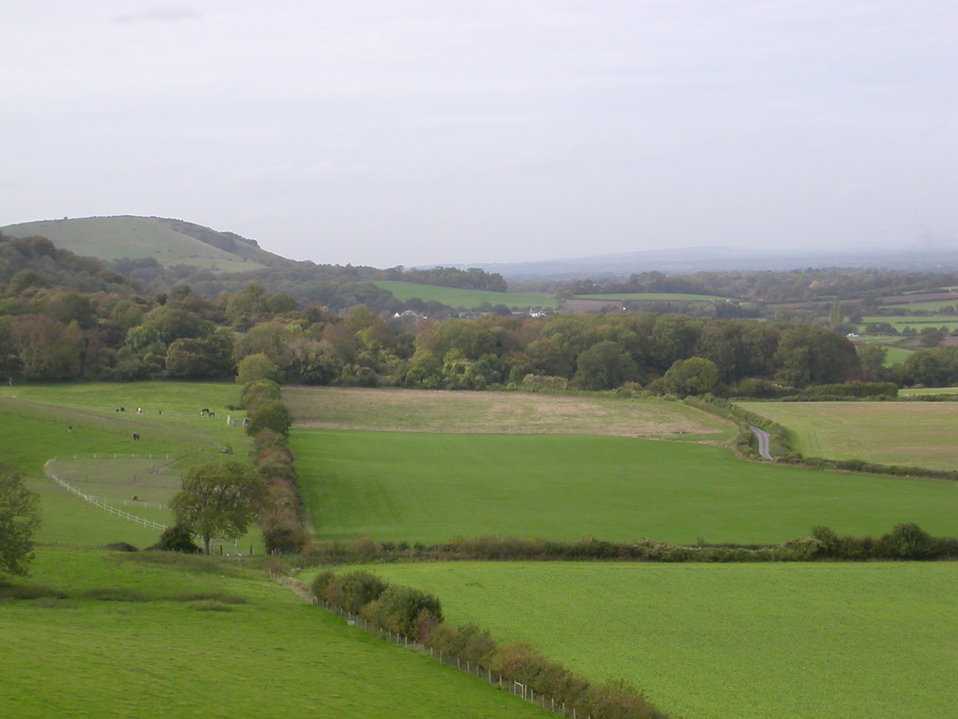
View to the west from summit of Ditchling Beacon, looking towards Wolstonbury Hill.